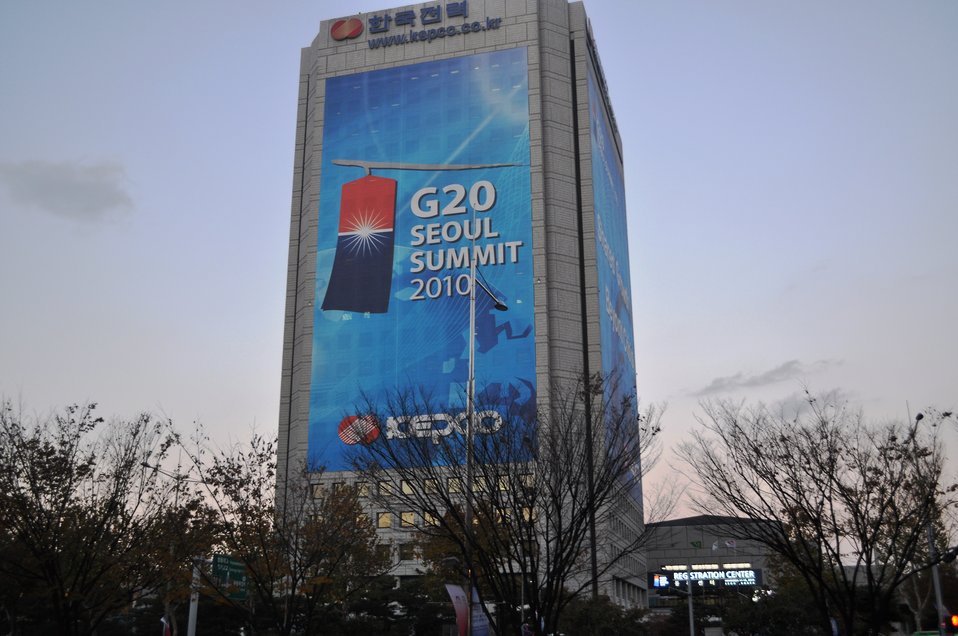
Geithner visit to Asia, November 4-12, 2010

Treasury Secretary Tim Geithner joined the President in Seoul, Korea for the G-20 Summit.